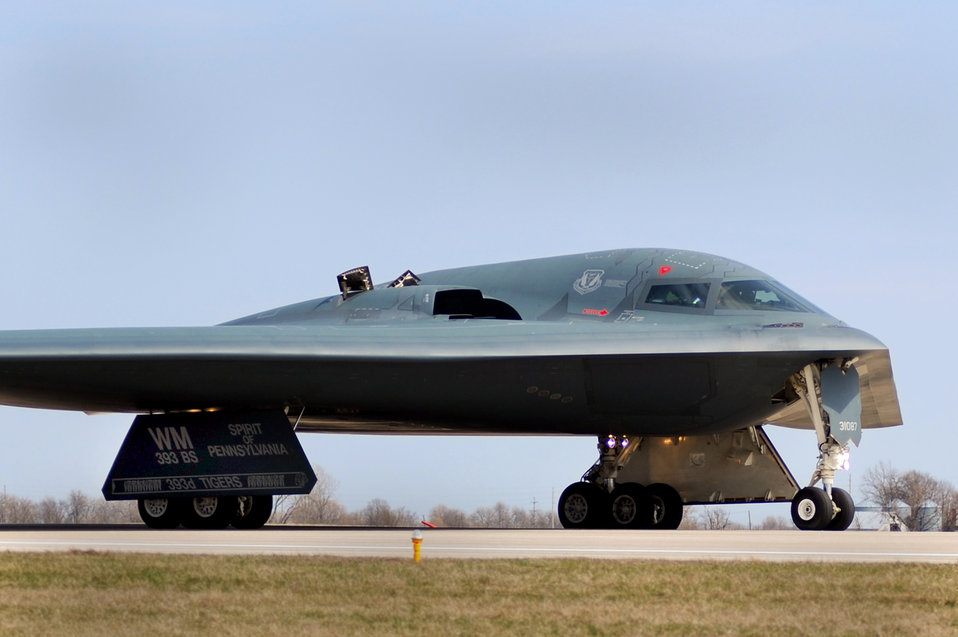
Operation Odyssey Dawn

WHITEMAN AIR FORCE BASE A B-2 Stealth bomber returns from a mission March 20, 2011.